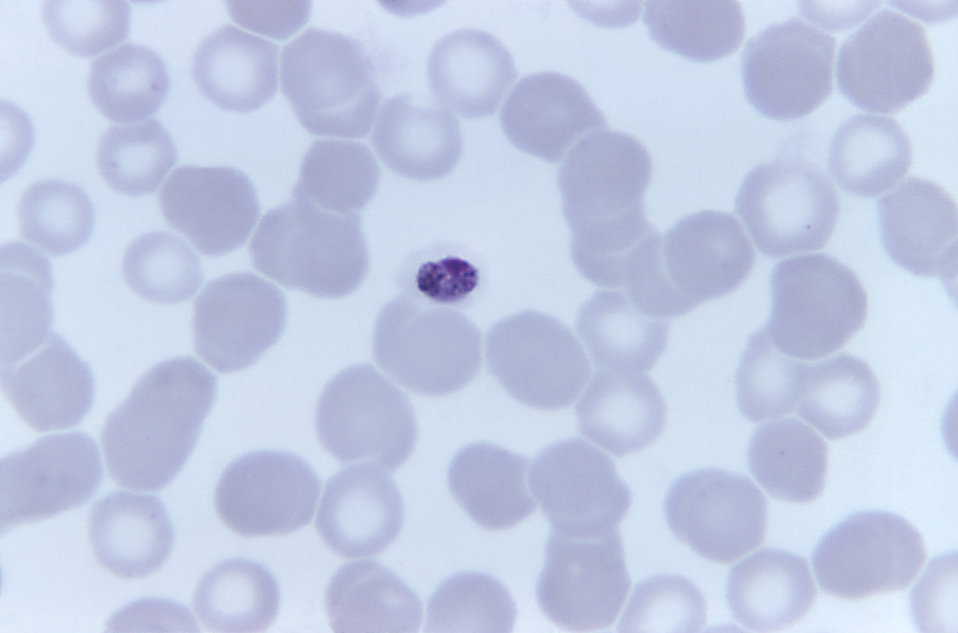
This photomicrograph depicts a compact Plasmodium malariae trophozoite using Giemsa stain; Magnified 1125X.